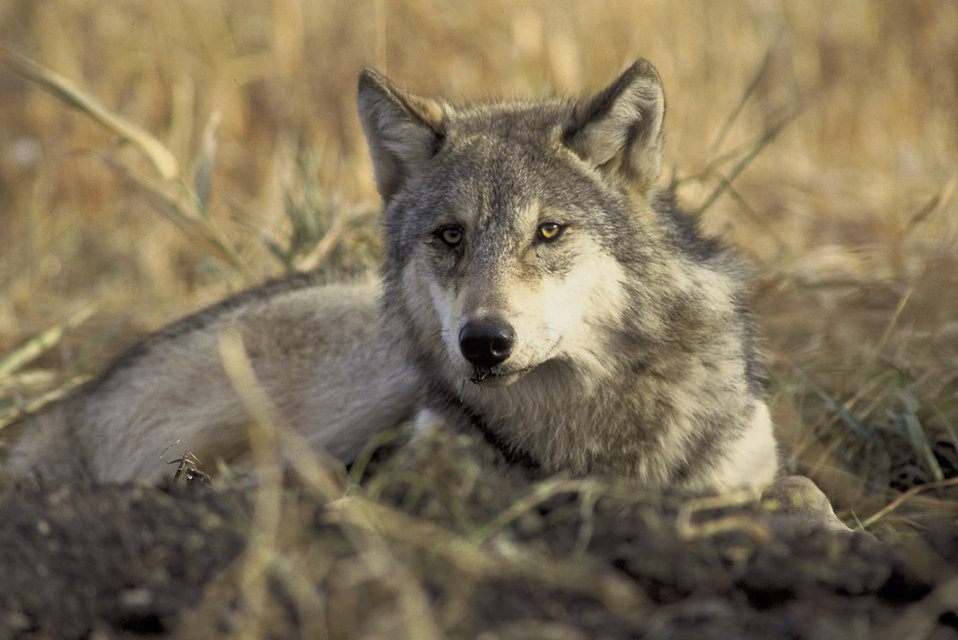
Gray Wolf